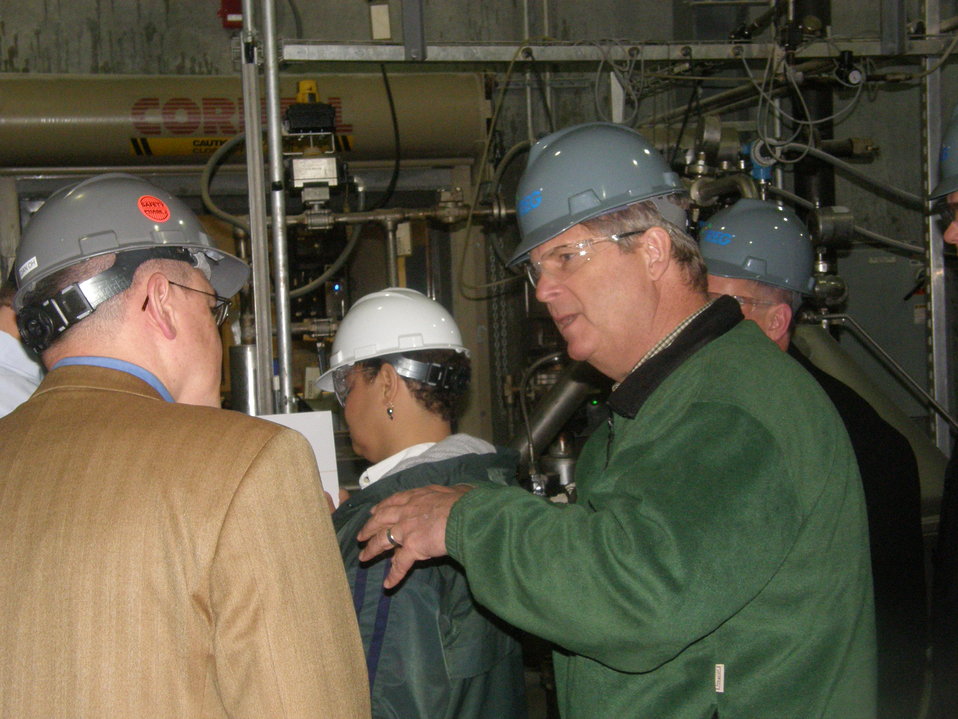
President and Chief Operating Officer for Renewable Energy Group (REG) Daniel Oh talks with Agriculture Secretary Tom Vilsack about the benefits of next-generation biofuels during a tour of REG's Newton, IA facility, on Tuesday, April 19, 2011.